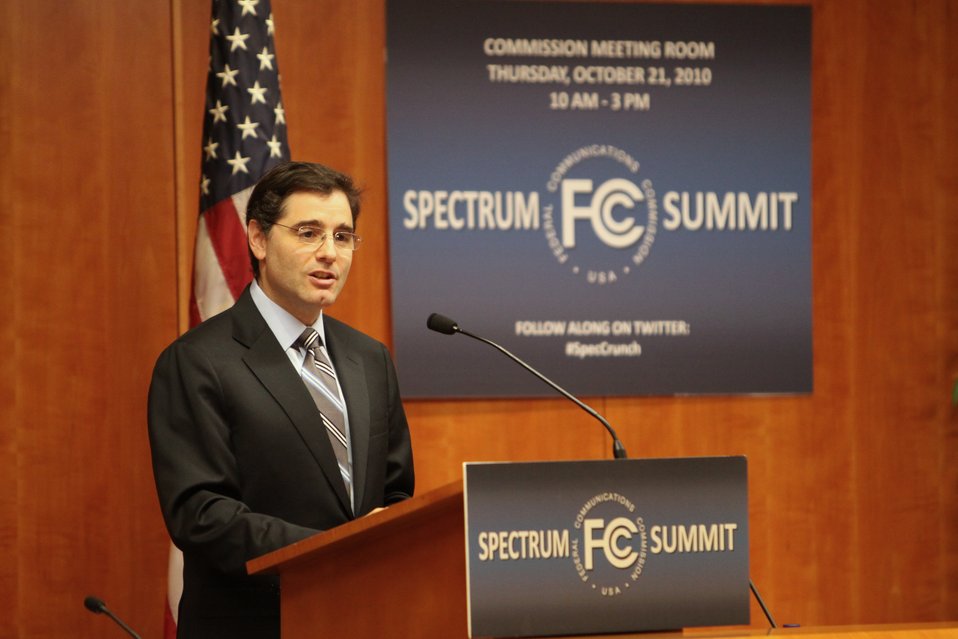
Spectrum Summit